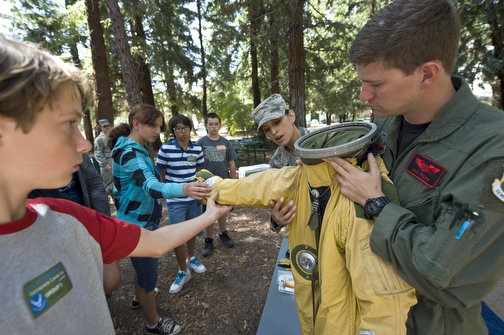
Air Force Week-Sacramento

Capt. Eric Frahm and Senior Airman Natalie Valle give 8th graders from Arcade Middle School a hands-on opportunity with a U-2 pilot’s suit and helmet during aerospace career day at Discovery Museum of Sacramento for Air Force Week, Sept. 10, 2009. Air Force Week-Sacramento is an event using various activities and exhibitions to educate the community about the Air Force's capabilities and missions. Captain Frahm is a U-2 pilot and Airman Valle is a suit technician for the high-altitude reconnaissance aircraft, both are stationed at Beale Air Force Base, Calif.